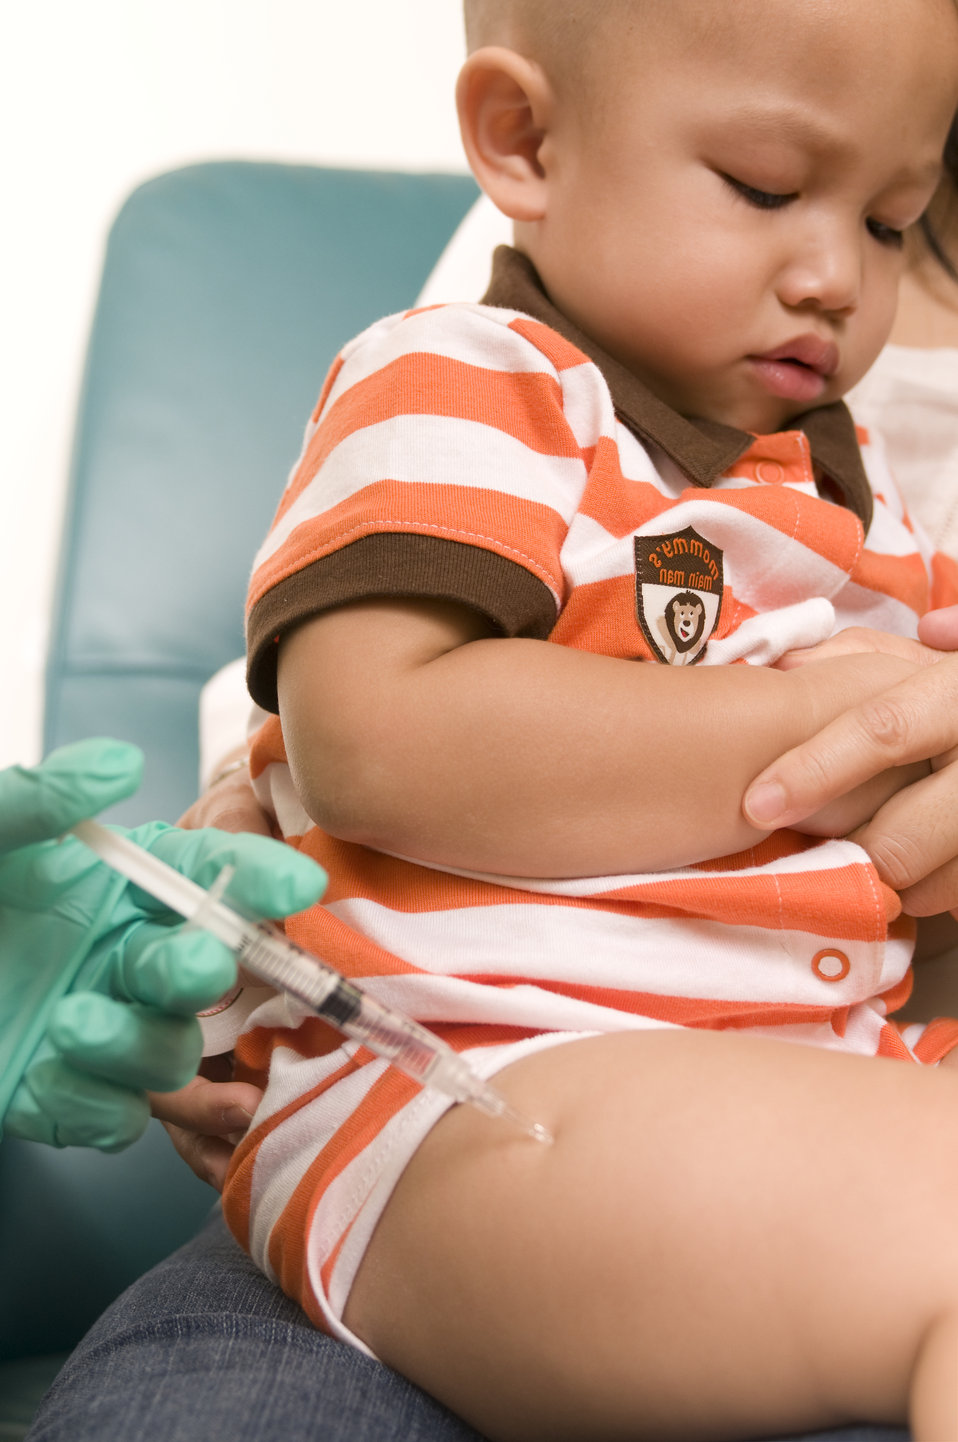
This image depicts a young boy who was receiving an injection in his right lateral thigh muscle. This is known as an intramuscular injection, and in this case, was delivering the requisite vaccination appropriate for his age group. See the link below, which will take you to the Centers for Disease Control's vaccination schedule for children based on their age groups.